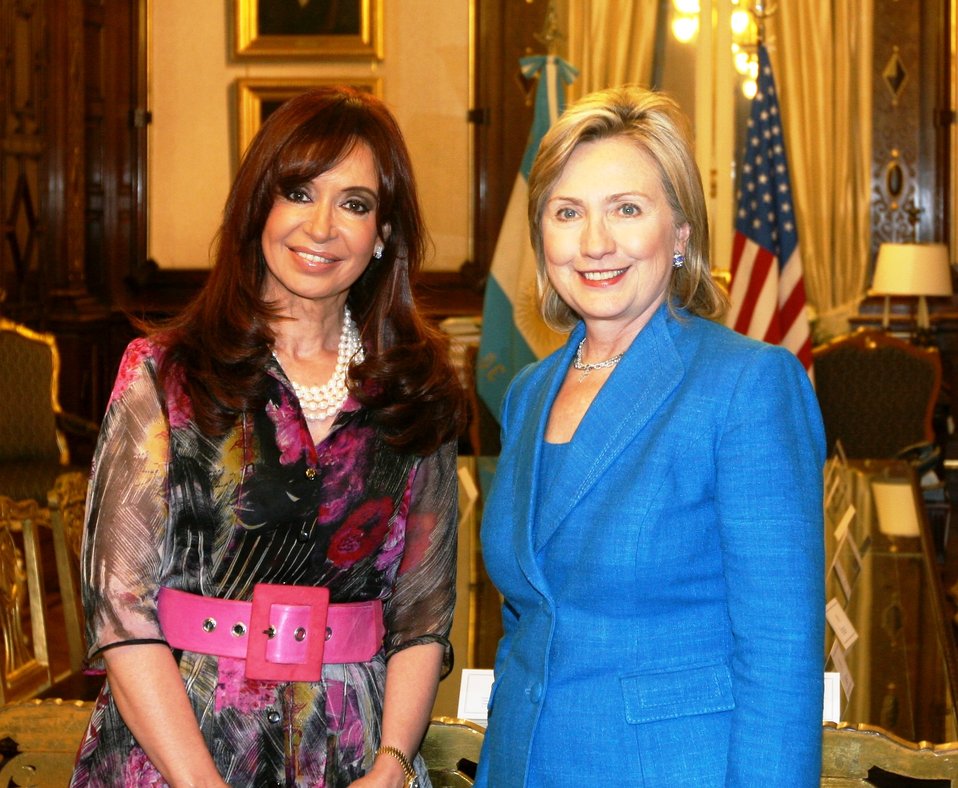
Secretary Clinton Visits Buenos Aires, Argentina

U.S. Secretary of State Hillary Rodham Clinton poses with Argentine President Cristina Fernández de Kirchner following a bilateral meeting in Buenos Aires, Argentina March 1, 2010.